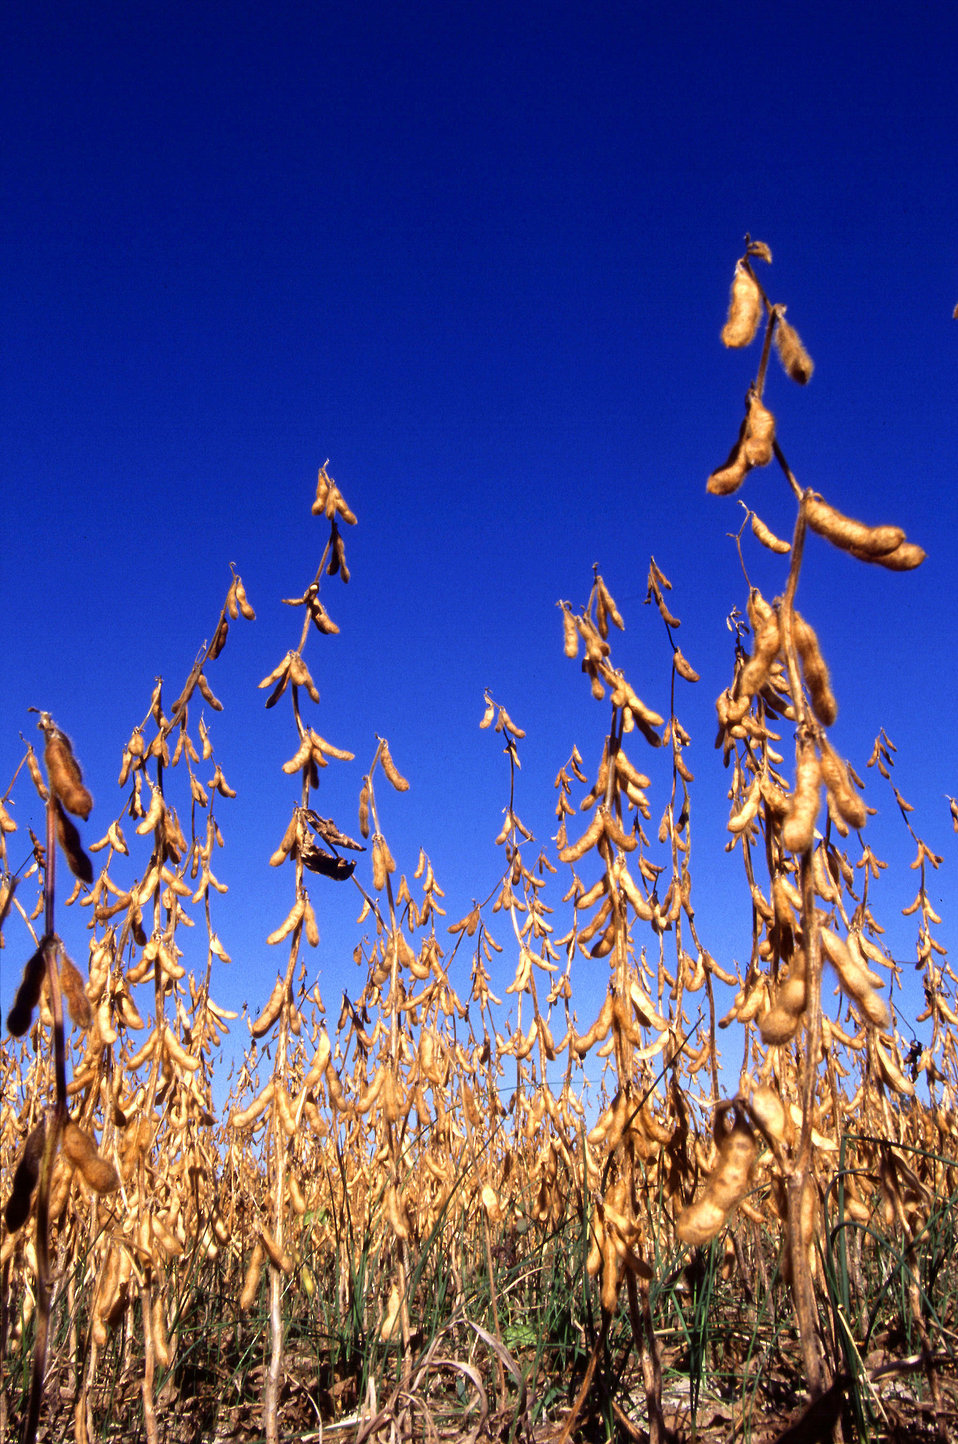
Soybeans ready for harvest.